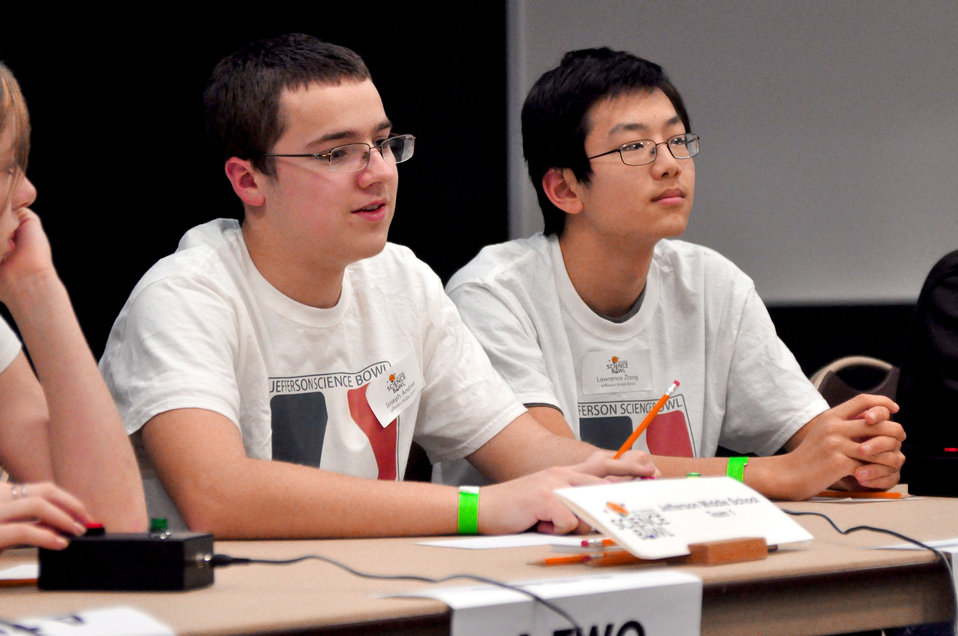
Jefferson Middle First Place DOE Middle School Science Bowl

14-017 DOE photo Lynn Freeny 2-1-2014 Oak Ridge Tennessee